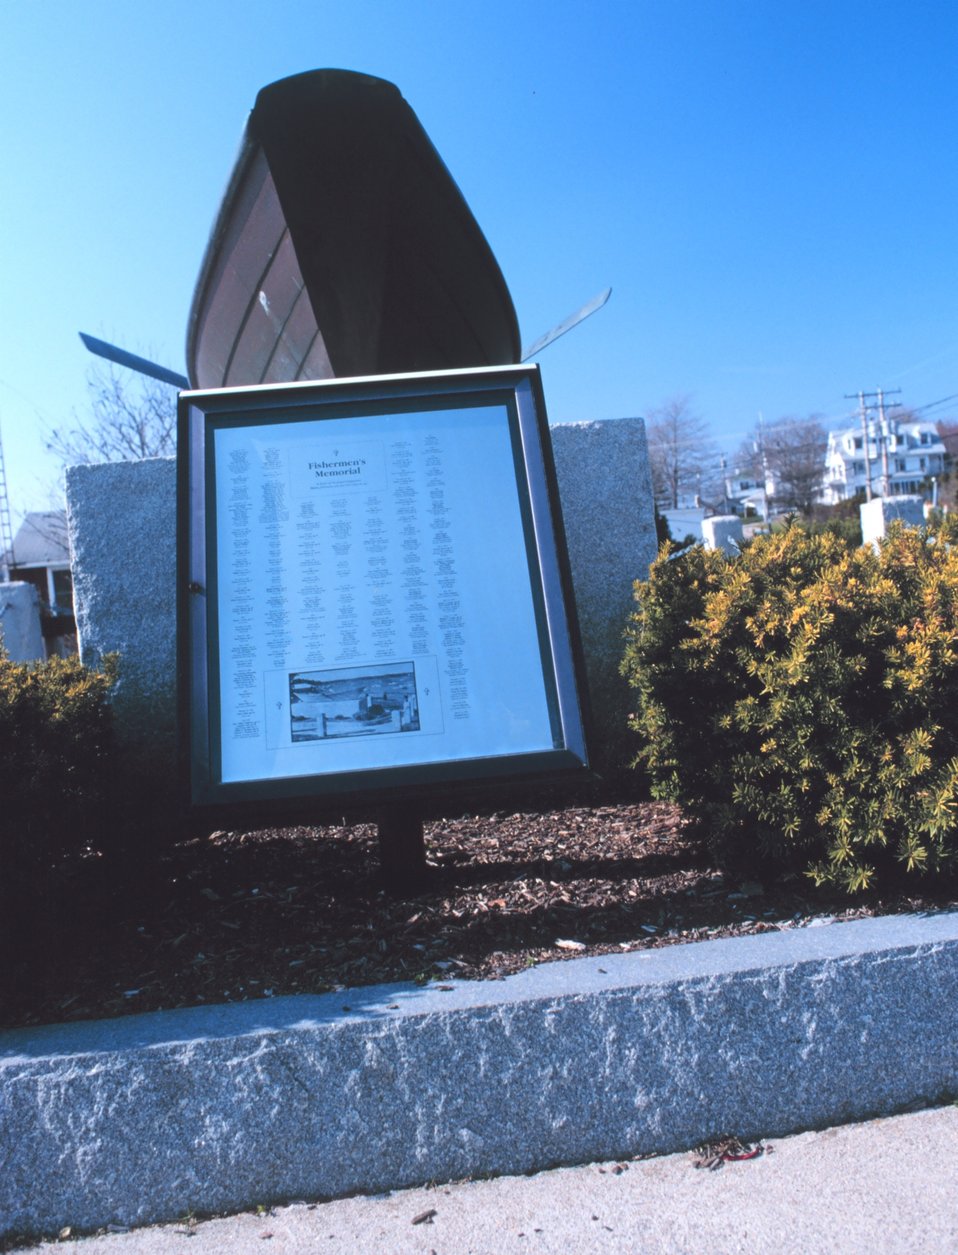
A Memorial to Fishermen.